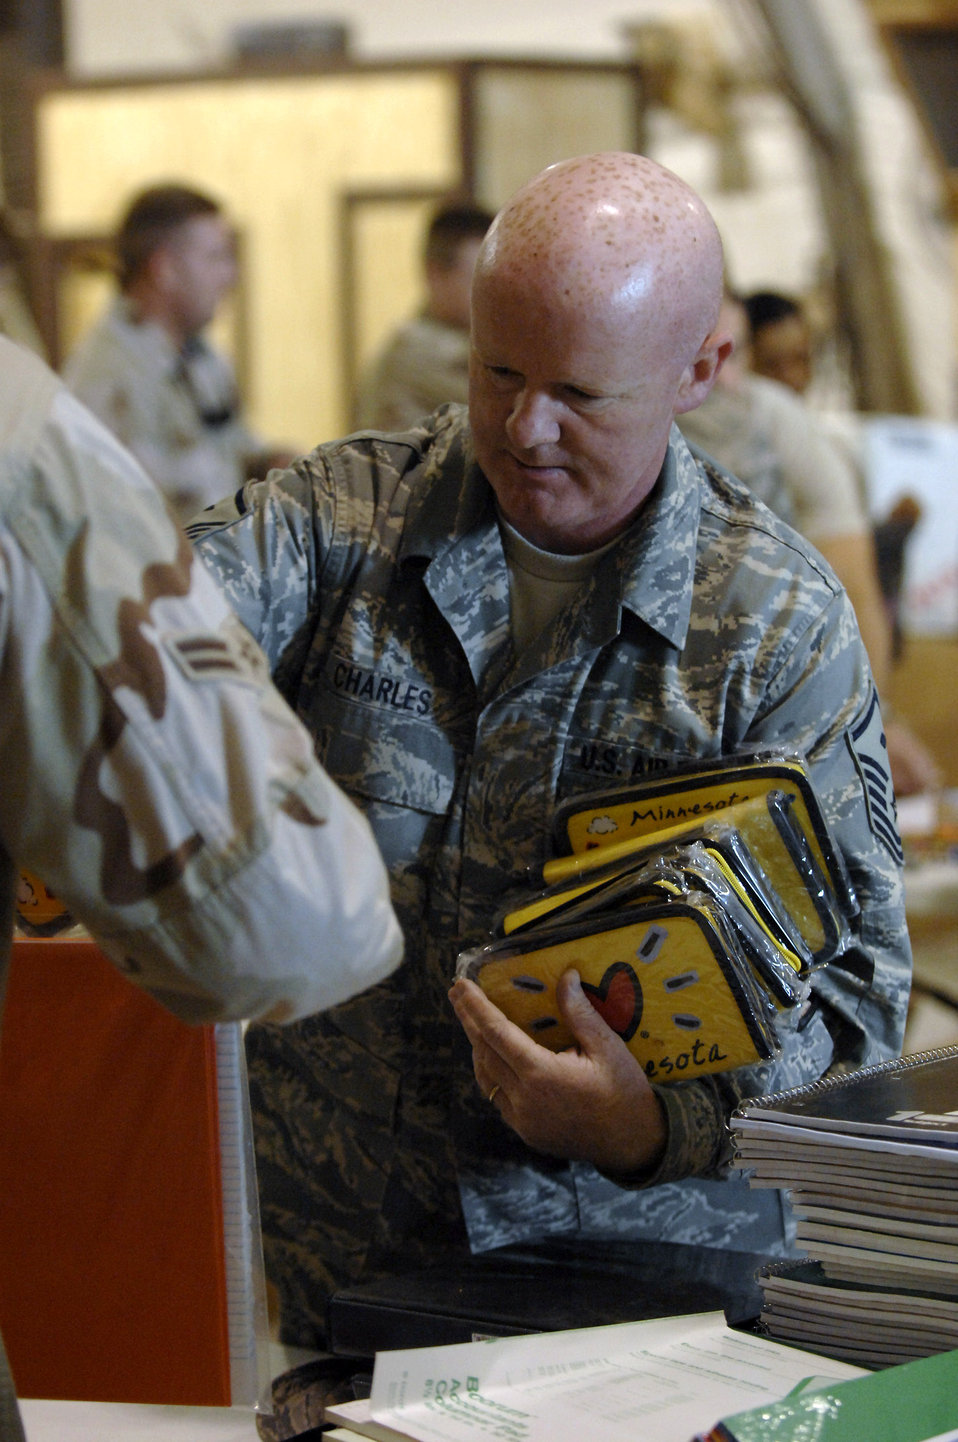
Iraqi Operation Child donations packed, ready

Master Sgt. Stephen Charles hands out school supplies in support of Operation Iraqi Child at Ali Base, Iraq, Dec. 22. In just over a month, Airmen on base collected thousands of school supply items, soccer balls, stuffed animals and toys from family and friends in the U.S. Airmen from the 407th Air Expeditionary Group sorted through the donated items which will be given to Iraqi families in the An Nasiriyah area villages. Sergeant Charles is assigned to the 407th Expeditionary Civil Engineer Squadron and is deployed from Hickam Air Force Base, Hawaii.